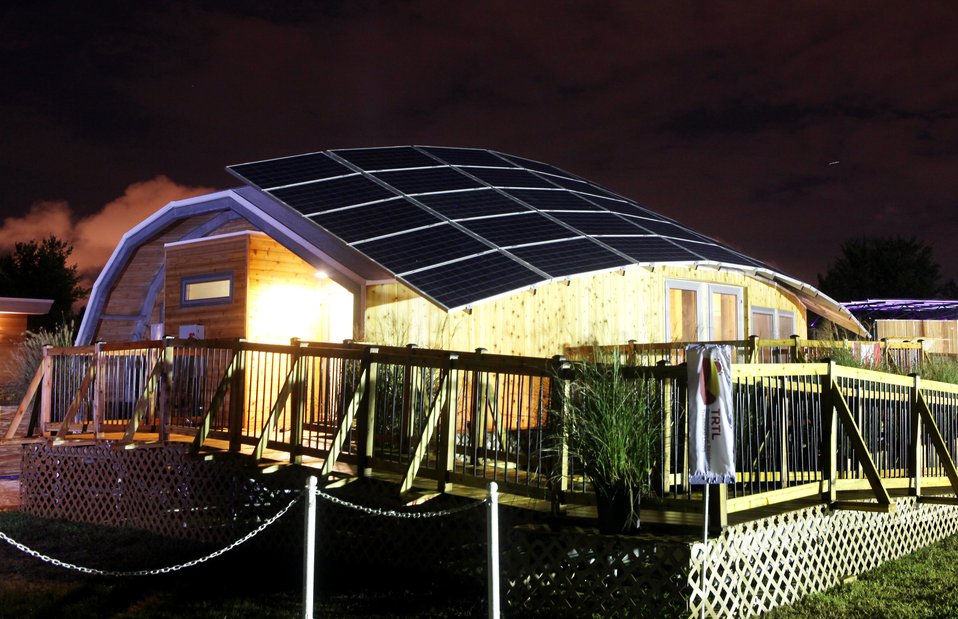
Canada entry at the U.S. Department of Energy Solar Decathlon, Washington, DC, September 23, 2011.(Credit: S.Paltera/ U.S. DOE / Solar Decathlon)
The Solar Decathlon is a competition that challenges college and university teams from around the world to design, build, and operate solar-powered houses that are affordable, highly energy efficient, attractive, and easy to live in. The 2011 teams and their houses represented a broad range of design solutions, geographic locations and climate, and were targeted toward urban, suburban and rural settings. The houses were intended for different housing markets, including lower-income, disaster relief, retirement, and single family.